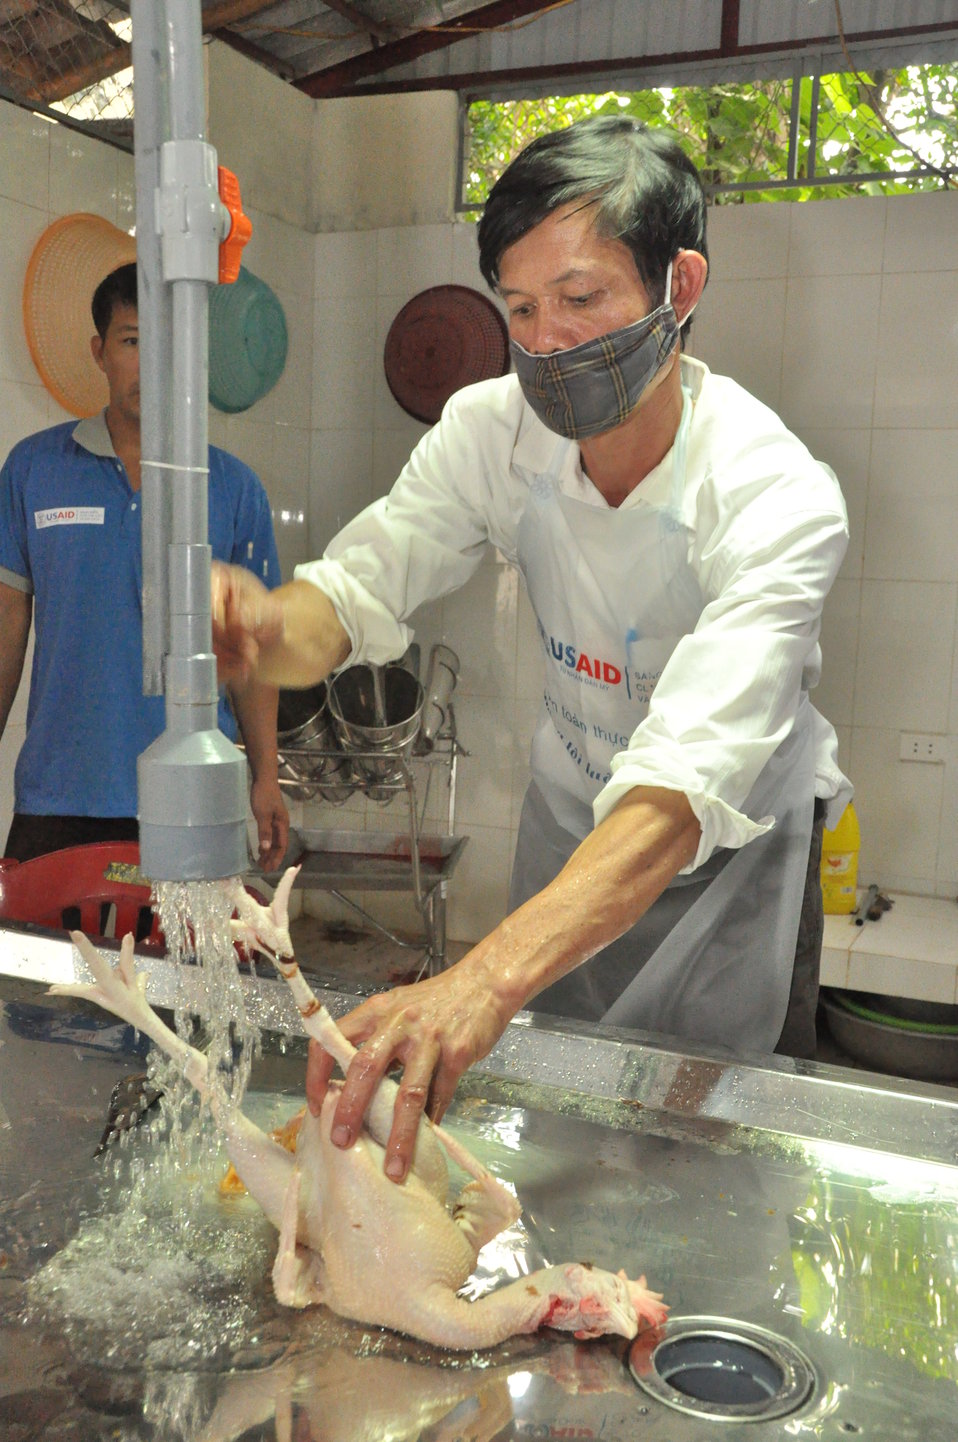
Handover Ceremony Hoa Mac Market Ha Nam

October 26, 2012